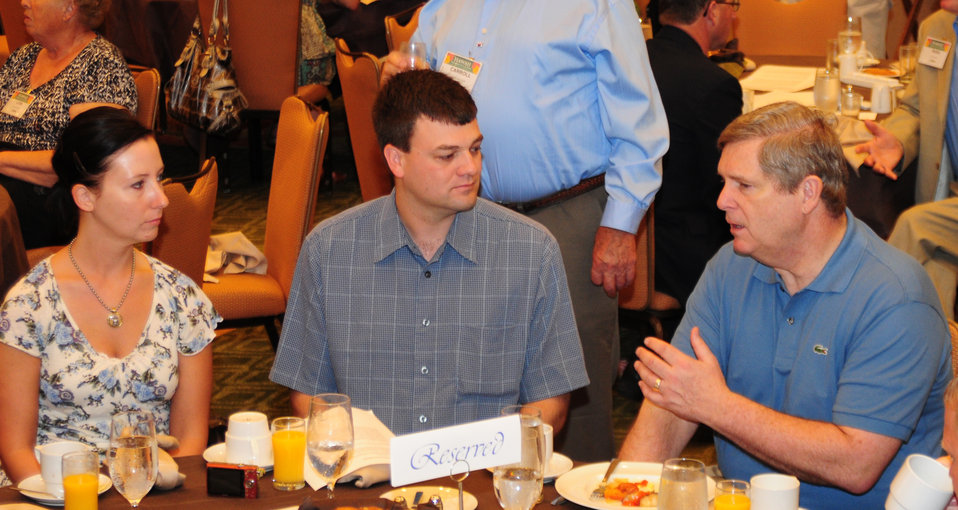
Agriculture Secretary Tom Vilsack discusses issues with State Board Members and young farmers and ranchers at the Iowa Farm Bureau Breakfast at the Sheridan Waikiki, Hawaii, on Sunday, January 8, 2012.